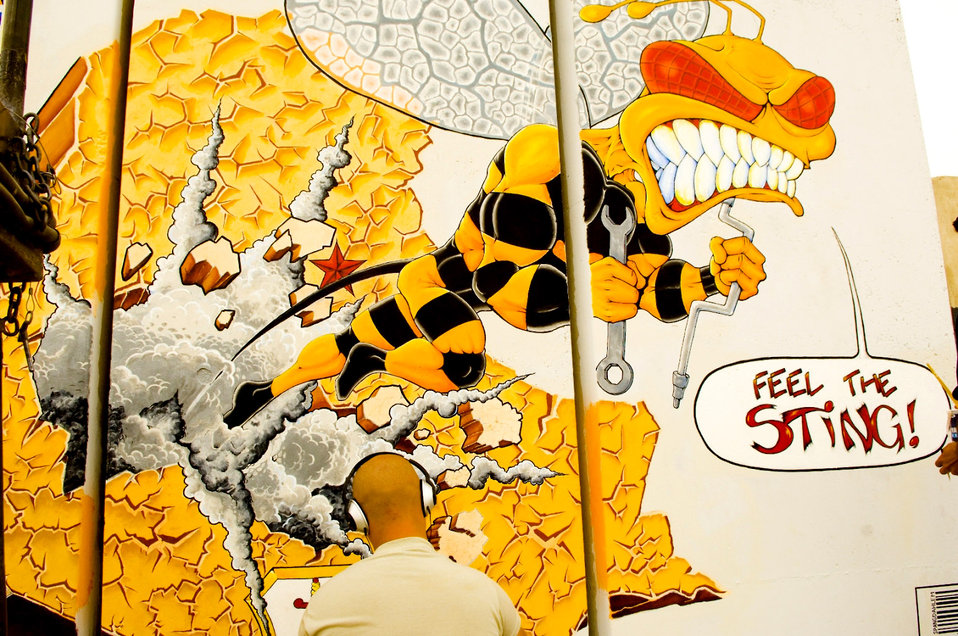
Painted legacy builds morale

Airman 1st Class Andre Cotan places finishing touches on a flightline mural Dec. 1 at Balad Air Base, Iraq. Airmen from the 322nd Expeditionary Aircraft Maintenance Squadron painted the mural to commemorate their squadron's time spent in Iraq. Airmen Cotan is deployed from Spangdahlem Air Force Base, Germany.